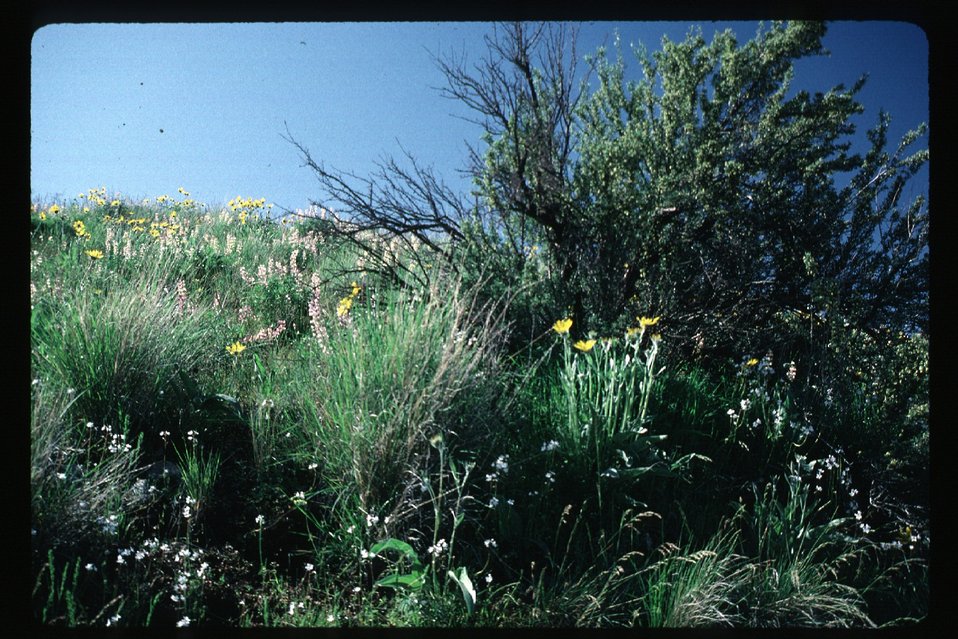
Wildflowers Scenic LSRD Lower Snake River District